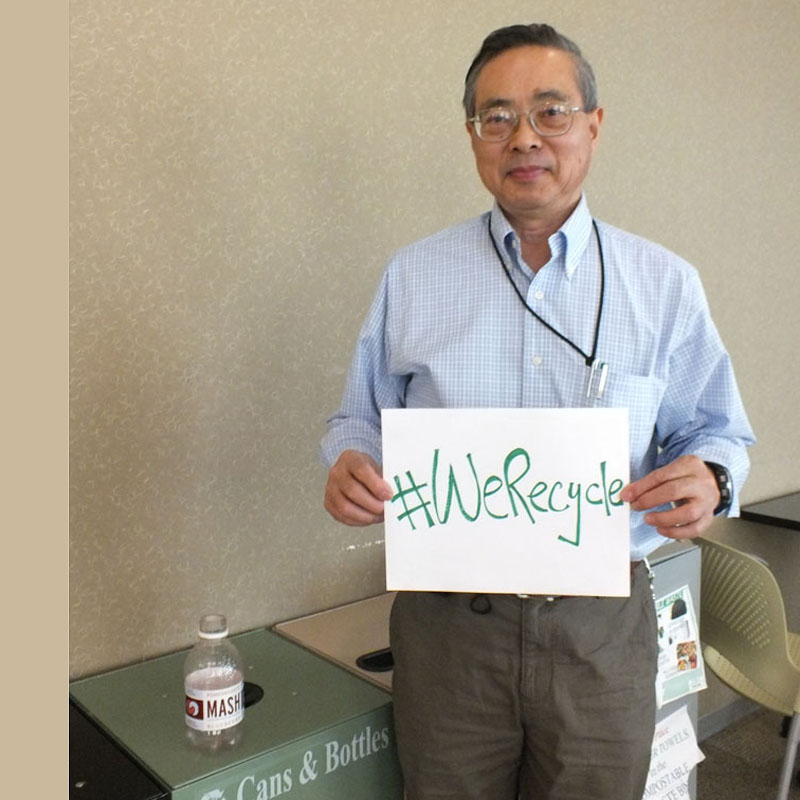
EPA Employee Chichang Recycles

At EPA, #WeRecycle. Learn how you can too: www2.epa.gov/recycle